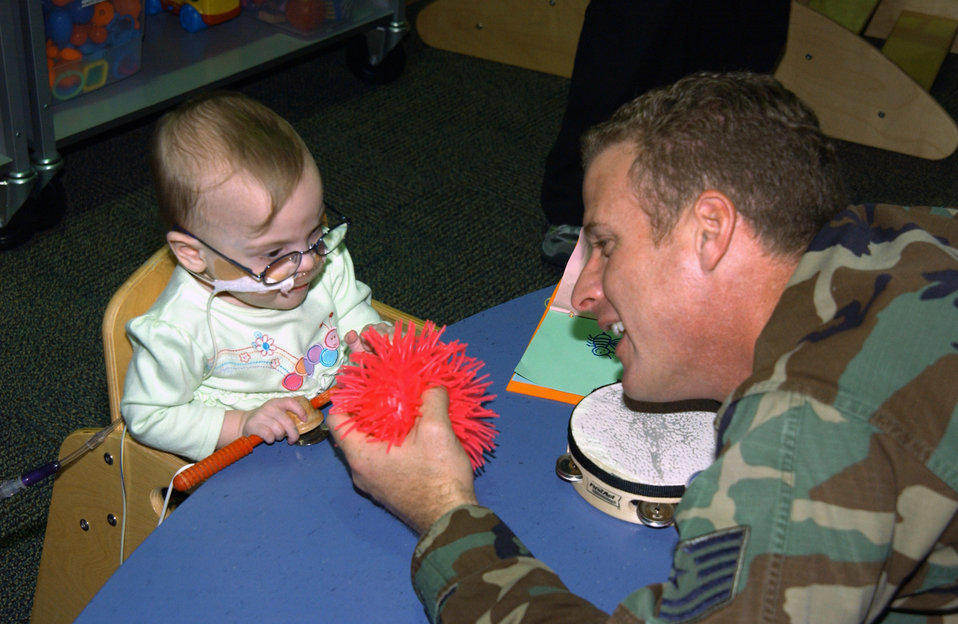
Volunteer program aims to go Air Force wide

Tech. Sgt. David French entertains Dilana, a patient at a pediatrics specialty hospital in St. Louis, Mo., during an Airmen for Children visit. Sergeant French has volunteered periodically to spend time with children staying at the hospital. He is the client support NCOIC for the 375th Communications Squadron at Scott Air Force Base, Ill.